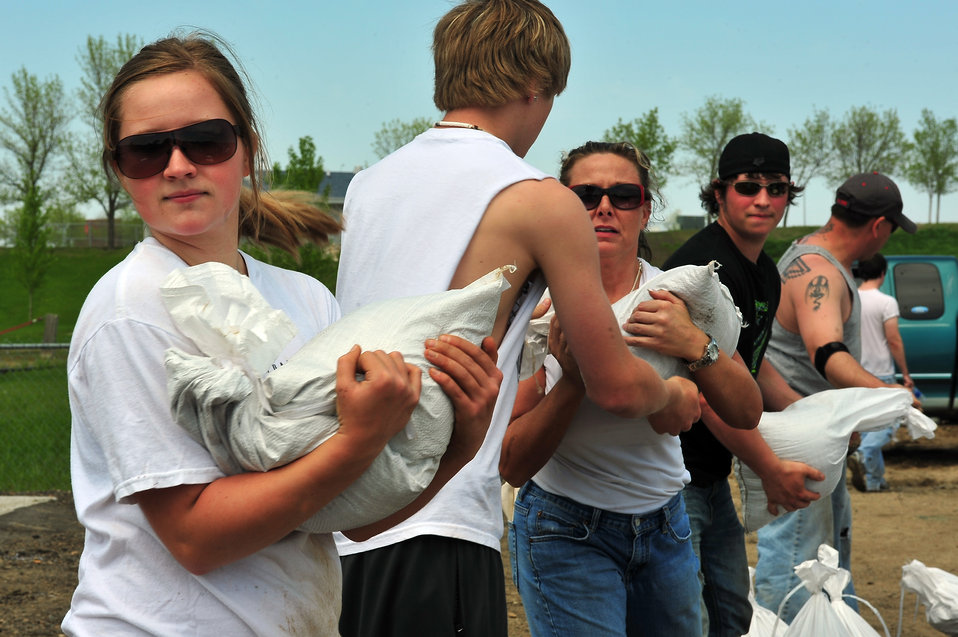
Minot Airmen help neighbors as flood water rises

Airmen and local citizens work together to make sandbags at the Minot Public Works June 1, 2011, in Minot, N.D. In preparation for possible flooding, the city of Minot, with assistance from Airmen from Minot Air Force Base, North Dakota National Guard as well as many other organizations, are setting up secondary dikes along the river. The Souris River threatens to break the levies already in place, thousands of Minot citizens, including military members, their families and DOD civilians, have been forced to evacuate the area.